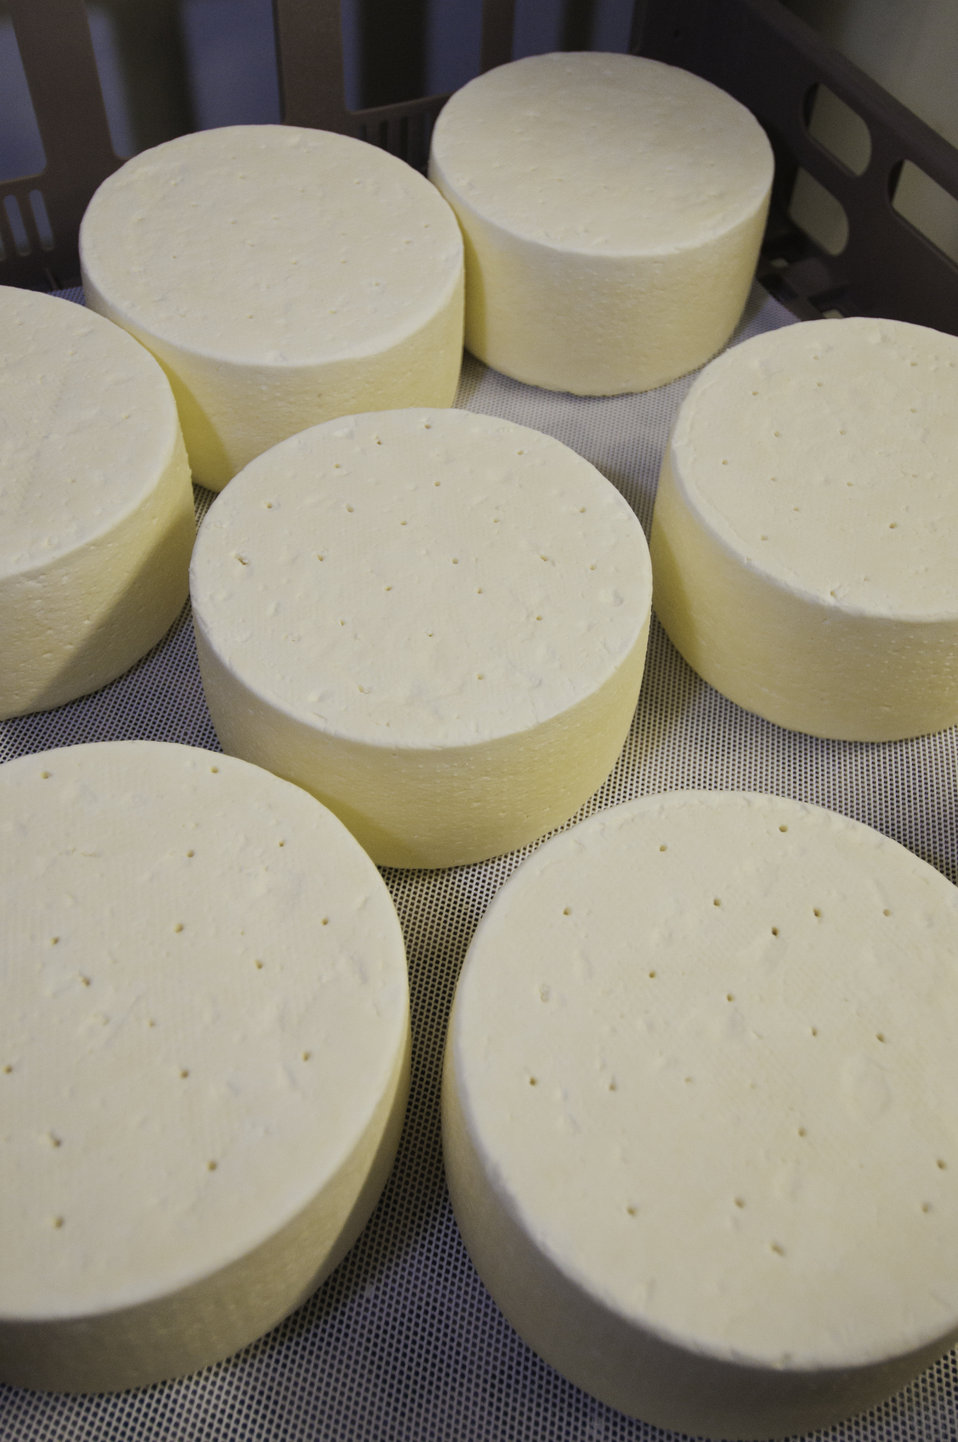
Cheese rounds that have been inoculated with mold cure in the aging room to produce Chapel’s Country Creamery, “Bay Blue” cheese. The dairy produces hand crafted artisanal cheeses with fresh raw milk produced on the dairy’s Grade A dairy farm in Easton, MD. The dairy’s grass fed Jersey and Holstein cows produce high quality milk, rich in cream. The milk is all- natural and contains no synthetic hormones, antibiotics, or chemical compounds. They mentioned that by producing our own cheese from start to finish, we insure the highest quality possible.